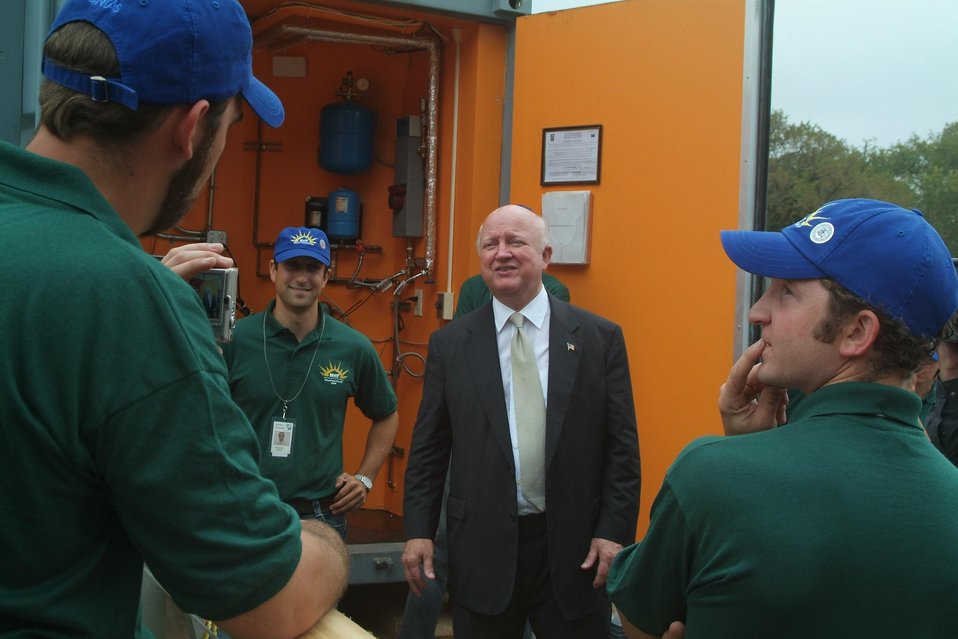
ENERGY SECRETARY SAMUEL BODMAN SPOKE WITH 2005 SOLAR DECATHLON PARTICIPANTS FROM THE NEW YORK INSTITUTE OF TECHNOLOGY.

THE SOLAR DECATHLON HELD ON OCTOBER 7 - 16, 2005 IN WASHINGTON, DC. THE PARTICIPANTS WERE FROM 18 COLLEGES AND UNIVERSITIES AROUND THE WORLD. THE TEAMS COMPETED IN THE DESIGN, BUILD AND OPERATED THE MOST ATTRACTIVE AND ENERGY-EFFICIENT SOLAR-POWERED HOME. THE PARTICIPANTS ONLY USED ENERGY FROM THE SUN TO GENERATE ELECTRICITY TO OPERATE A HOME.